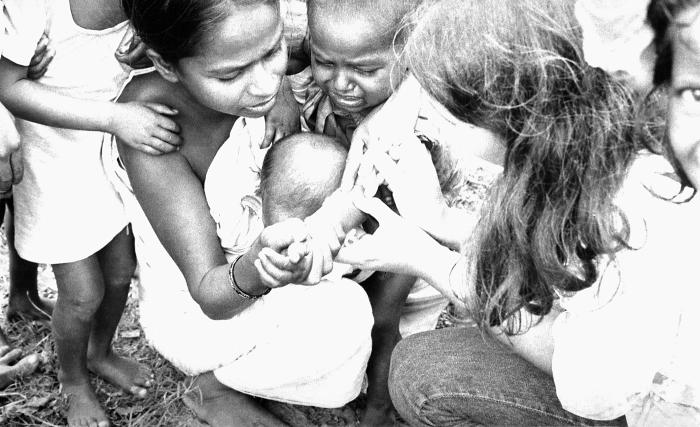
This smallpox eradication team vaccinator, Jennifer Alpern, a vacationing American student, was in the process of administering a vaccine to a young boy who at the time, was living with his family in a bastee, which was an illegal settlement. The bastees were communities where no governmental facilities were present, and where poverty ran rampant.Holding the bifurcated needle in her right hand, the vaccinator was about to administer the vaccine to the apprehensive child's left forearm, by pricking the skin with the bifurcated needle after it had been tipped with live vaccinia virus.